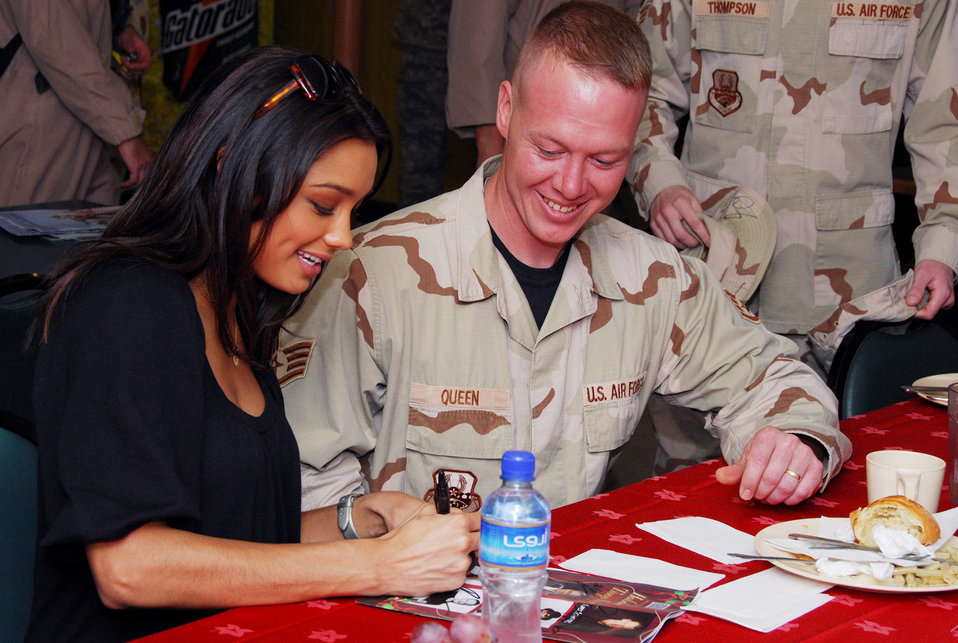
USO group visits servicemembers in Southwest Asia

Miss USA Rachel Smith signs an autograph for Staff Sgt. Christopher Queen at the Independence Dining Facility Dec. 17 at a Southwest Asia air base. Miss USA is one of the celebrities touring with the United Service Organizations 2007 holiday show.